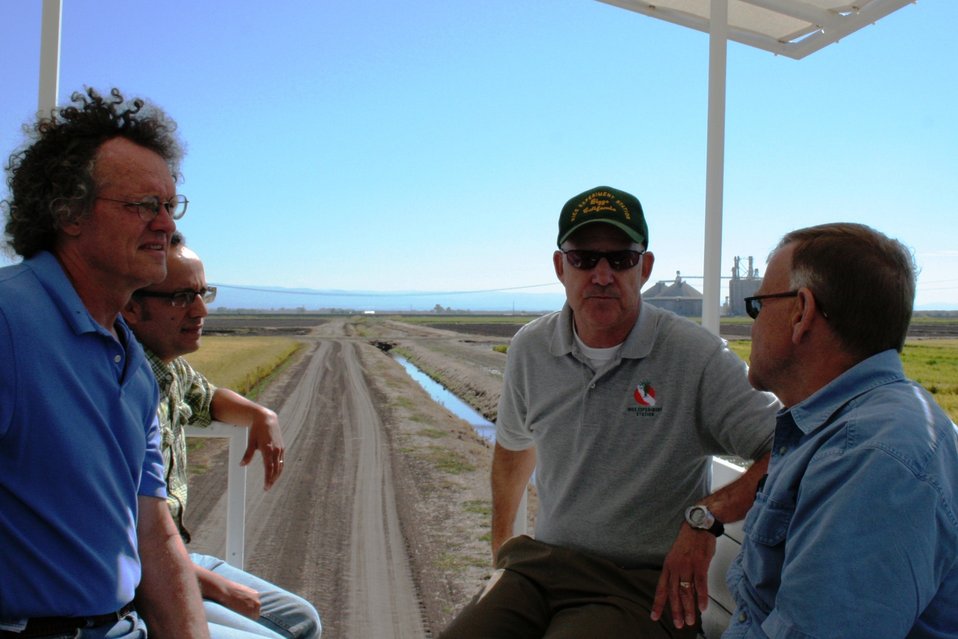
FDA's Rice Tour: Looking for Insights on Arsenic (0775)

FDA Commissioner Margaret A. Hamburg and colleagues visited research facilities and rice farms in California on Sept. 4-5, 2013 in an effort to gain a greater understanding of the presence of arsenic in rice. Here, Kent McKenzie, center, director of the Rice Experiment Station, talks with FDA's Deputy Commissioner for Foods and Veterinary Medicine Michael Taylor, right. For more information, read the FDA Voice blog:

• On Farms and in Labs, FDA and Partners Are Working to Get Answers on Arsenic in Rice